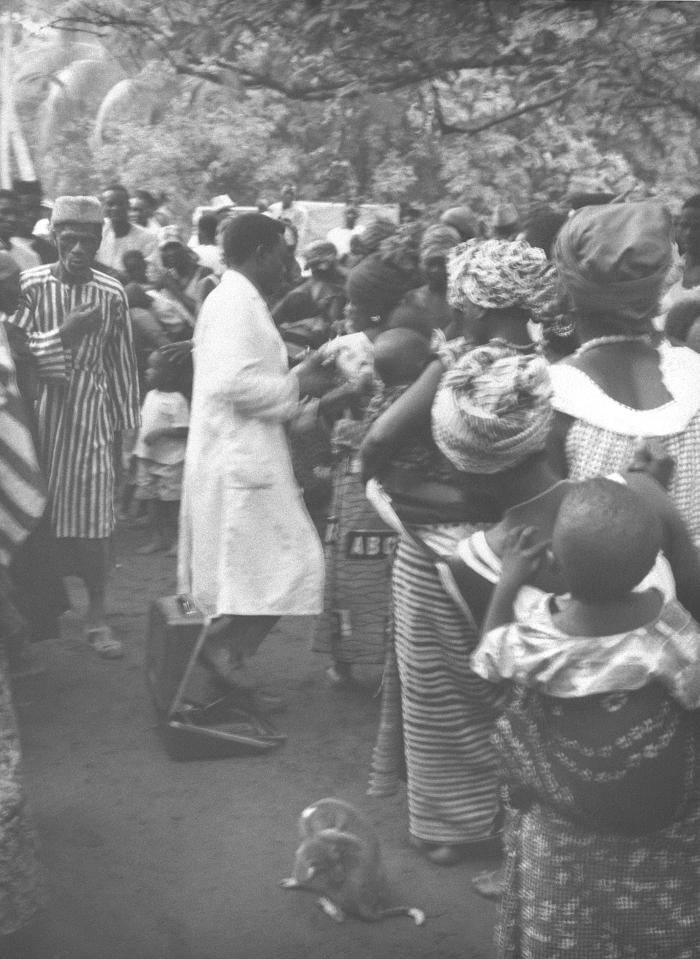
These Nigerians were receiving their smallpox vaccinations during the country's 1968 Smallpox Eradication program.